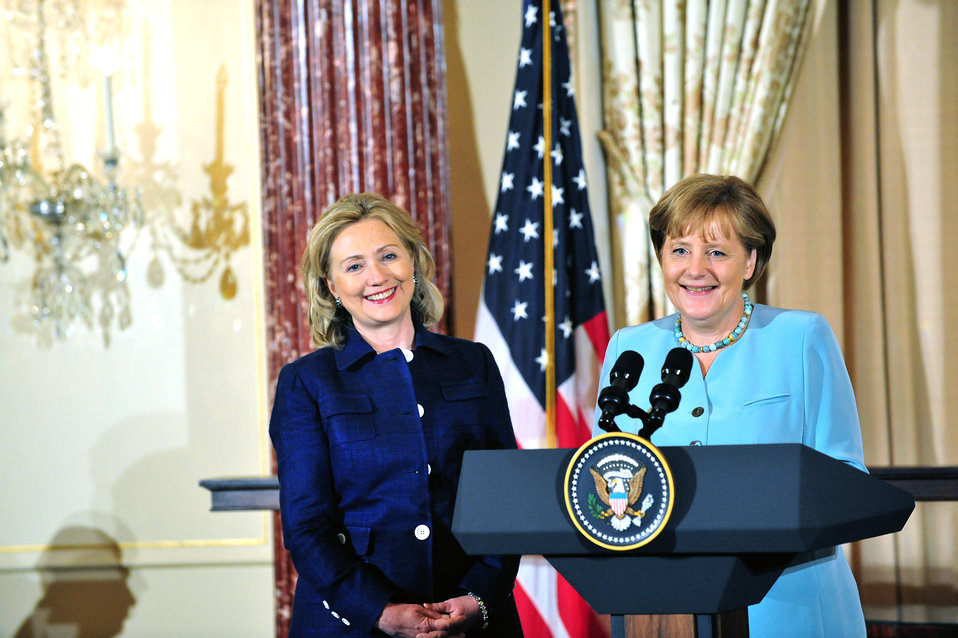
German Chancellor Merkel Delivers Remarks

German Chancellor Angela Merkel delivers remarks at a State Luncheon hosted in her honor by U.S. Vice President Joseph Biden and Dr. Jill Biden, and U.S. Secretary of State Hillary Rodham Clinton, at the U.S. Department of State in Washington, D.C., on June 7, 2011.